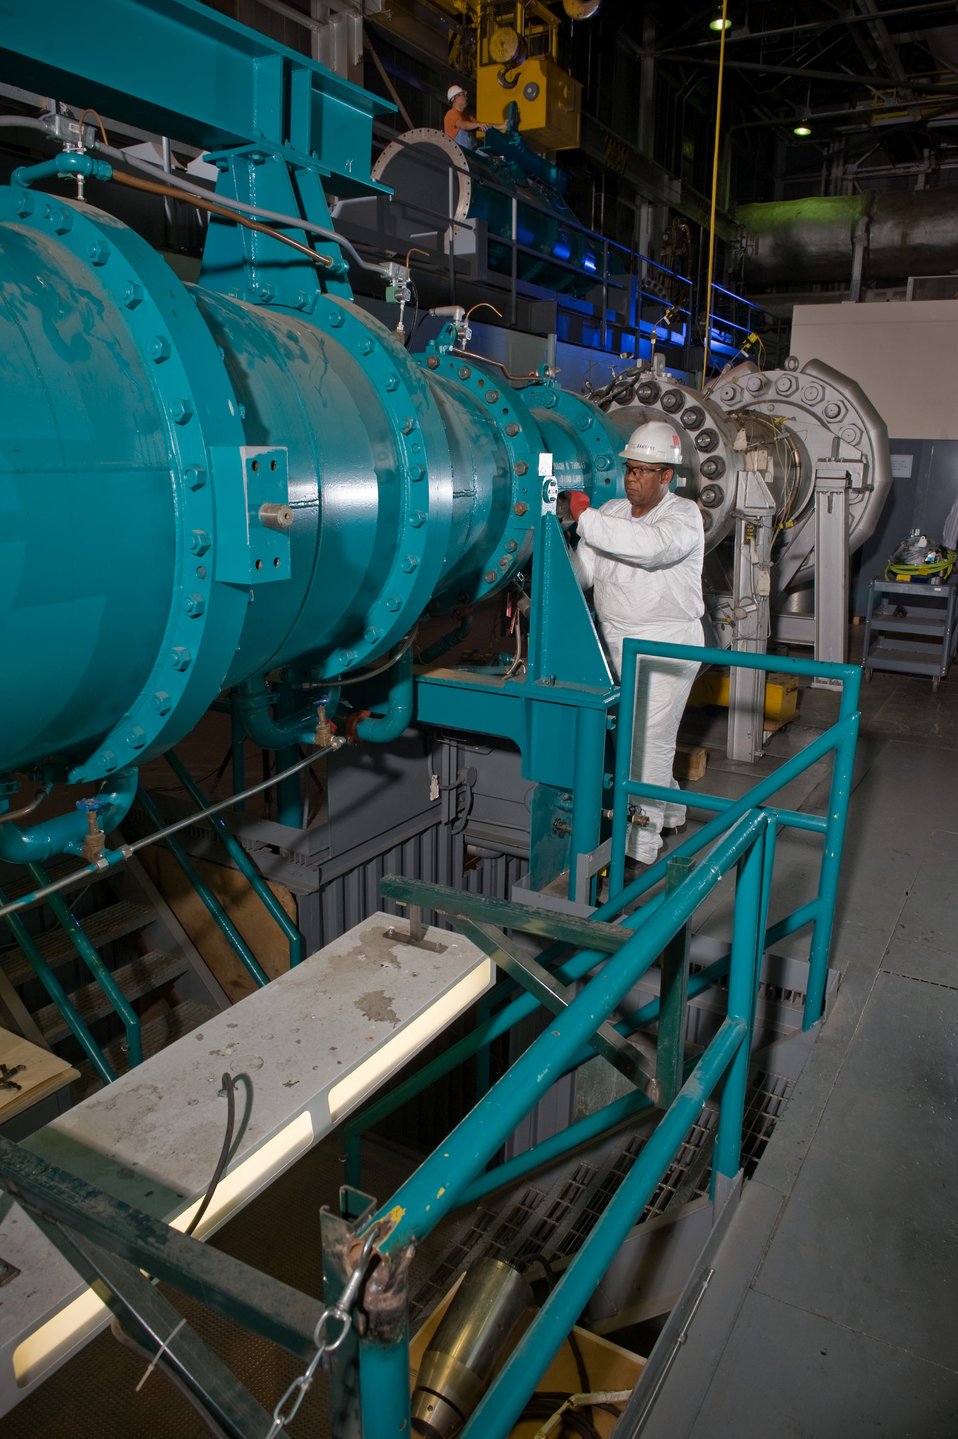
Wind power at Arnold AFB

Jimmie Sanders (foreground) tightens a flange bolt on the 5,100-pound Mach 6 throat of the 50-inch closed-circuit hypersonic wind tunnel Oct. 5, 2009, at the Von Karman Gas Dynamics Facility at Arnold Air Force Base, Tenn. Scott Pogue (background) maneuvers a bridge crane hoist. The facility operates three continuous-flow wind tunnels that are powered by a nine-stage compressor system that is an eighth of a mile long and is driven by six electric motors providing a total of 92,000 horsepower.